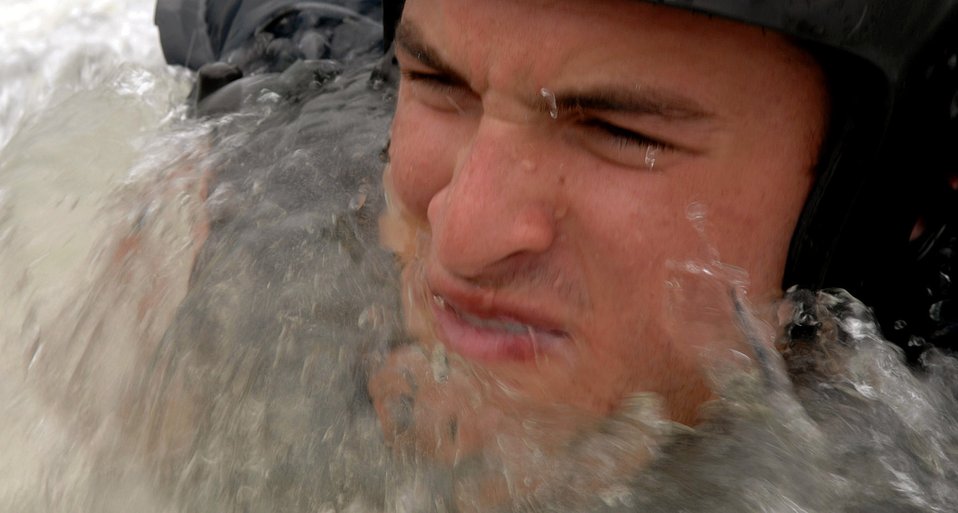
Water survival

Cadet Domingo Astiasaran fights to stay afloat in a parachute disentanglement exercise for Survival, Evasion, Resistance and Escape Water Survival Training June 20. This training simulates a pilot landing in the ocean attached to his parachute and how to survive the landing. Cadet Astiasaran is a U.S. Air Force Academy cadet. Currently this training is being held on a monthly basis, in which Academy cadets rotate in on three-week intervals to take part in the survival training.